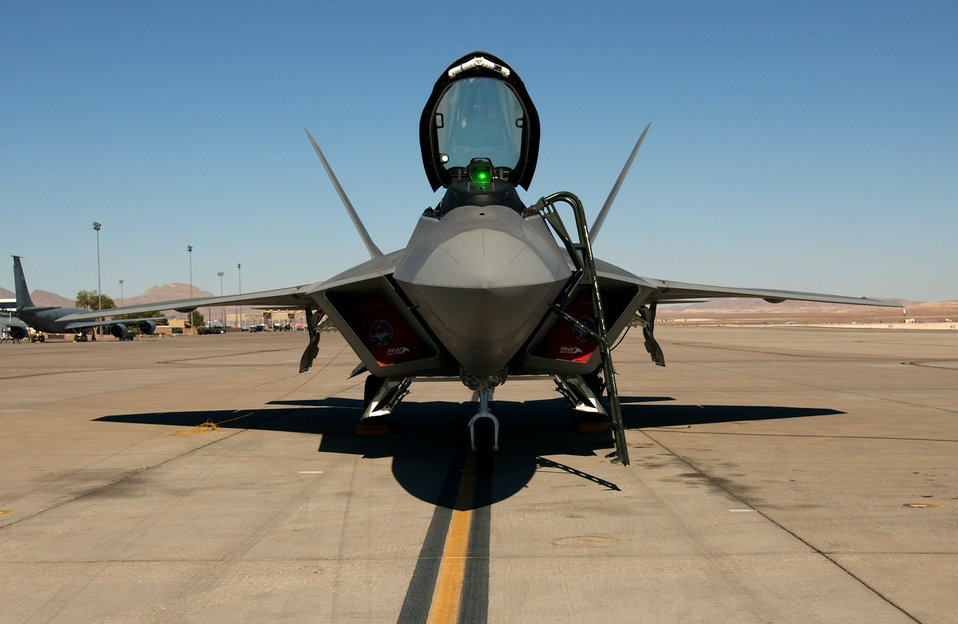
Red Flag 04-01

NELLIS AIR FORCE BASE, Nev. -- A Lockheed Martin F/A-22 Raptor sits on the parking ramp here Oct. 22, 2003. The F/A-22 is a new breed of super-fighter for the 21st century and is the first aircraft with the ability to fly at supersonic speeds without afterburners. The F/A-22 offers new capability to deploy and fight on Day 1. It will allow the Air Force to get to the fight faster, stay longer and fly more missions than any conventional fighter aircraft.